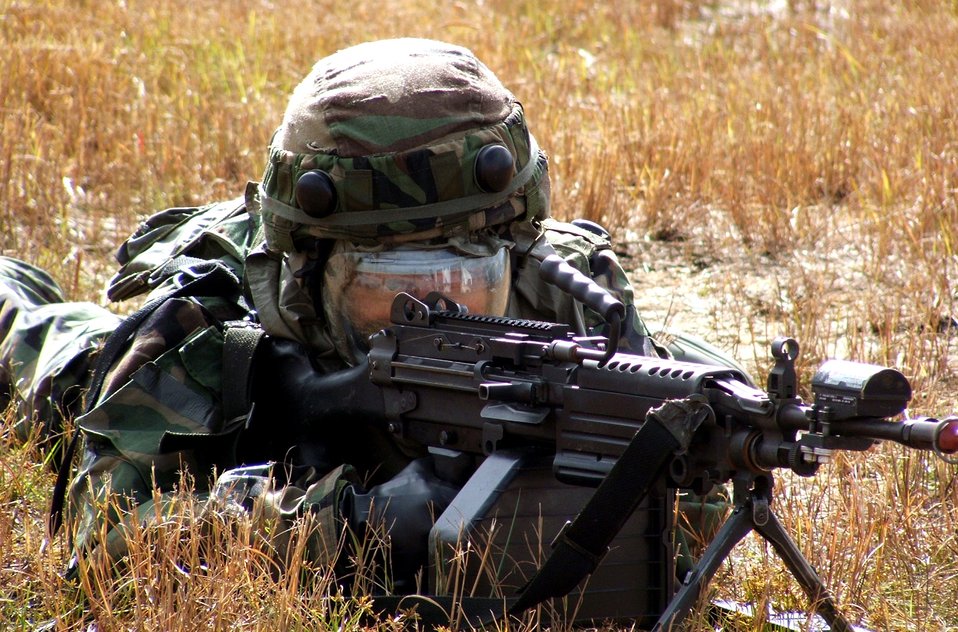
Eagle Flag

NAVAL AIR ENGINEERING STATION LAKEHURST, N.J. (AFPN) -- An Airman takes up a firing position during a scenario here during exercise Eagle Flag 06-1. The exercise goal is to test the ability of participants to open and establish an air base to an initial-operating capability for a forward operation, regardless of mission or aircraft type. The Airman was there Oct. 26.